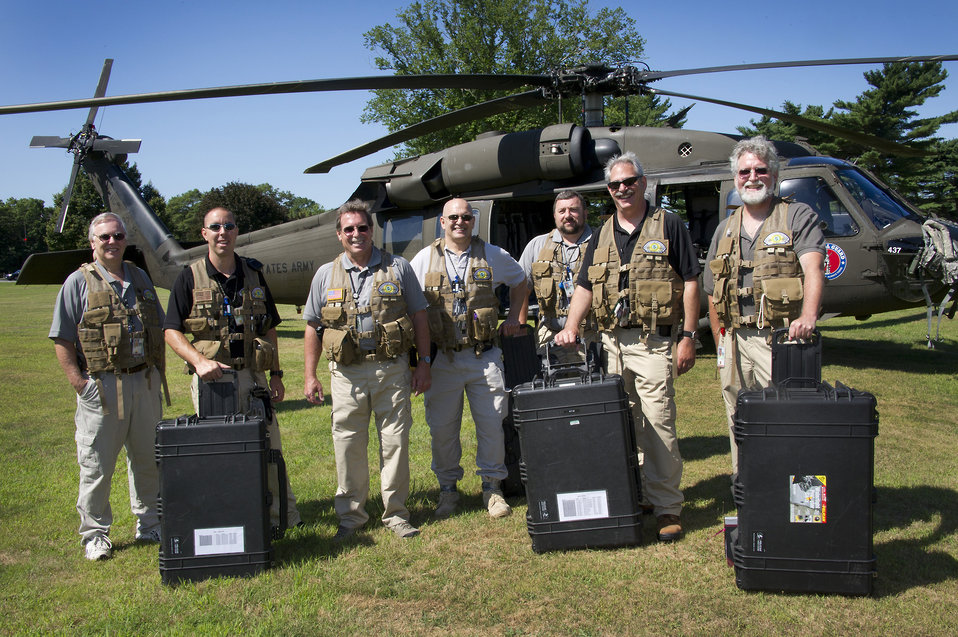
MEMBERS OF BROOKHAVEN NATIONAL LABORATORY'S 'S RADIOLOGICAL ASSISTANCE PROGRAM REGION 1 (RAP-1) PREPARING TO LEAVE WITH THEIR EQUIPMENT DURING A SEARCH MISSION EXERCISE.

NATIONAL NUCLEAR SECURITY ADMINISTRATION'S RADIOLOGICAL ASSISTANCE PROGRAM (RAP) IS THE NATION'S PREMIER FIRST-RESPONSE IN ASSESSING AN EMERGENCY SITUATION AND ADVISING DECISION-MAKERS ON FURTHER STEPS TO TAKE TO EVALUATE AND MINIMIZE THE HAZARDS OF A RADIOLOGIVAL INCIDENT. IT'S IMPLEMENTEDON A REGIONAL BASIS, WITH COORDINATION BETWEEN THE EMERGENCY RESPONSE ELEMENTS OF STATE, LOCAL AND FEDERAL AGENCIES. REGIONAL COORDINATION IS INTENDED TO PROVIDE A TIMELY RESPONSE CAPABILITY AND TO FOSTER A WORKING RELATIONSHIP BETWEEN NNSA AND THE RESPONSE ELEMENTS OF THE STATES, TRIBES AND LOCAL AGENCIES WITHIN THE REGION.